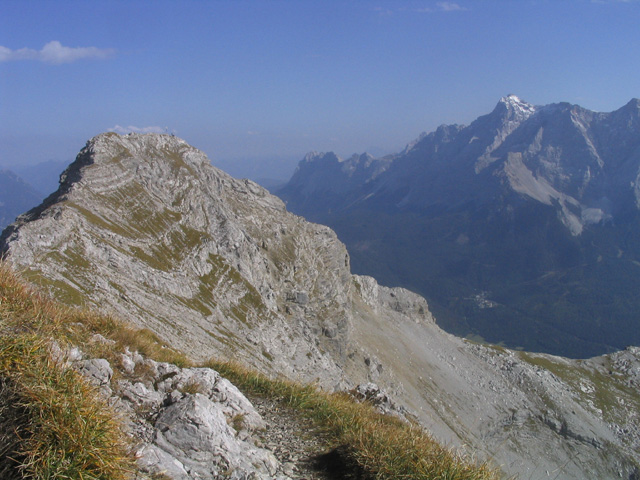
Deutsch: Berg Daniel (2340 m) von der Upsspitze aus gesehen, im Hintergrund die Zugspitze (2962 m).